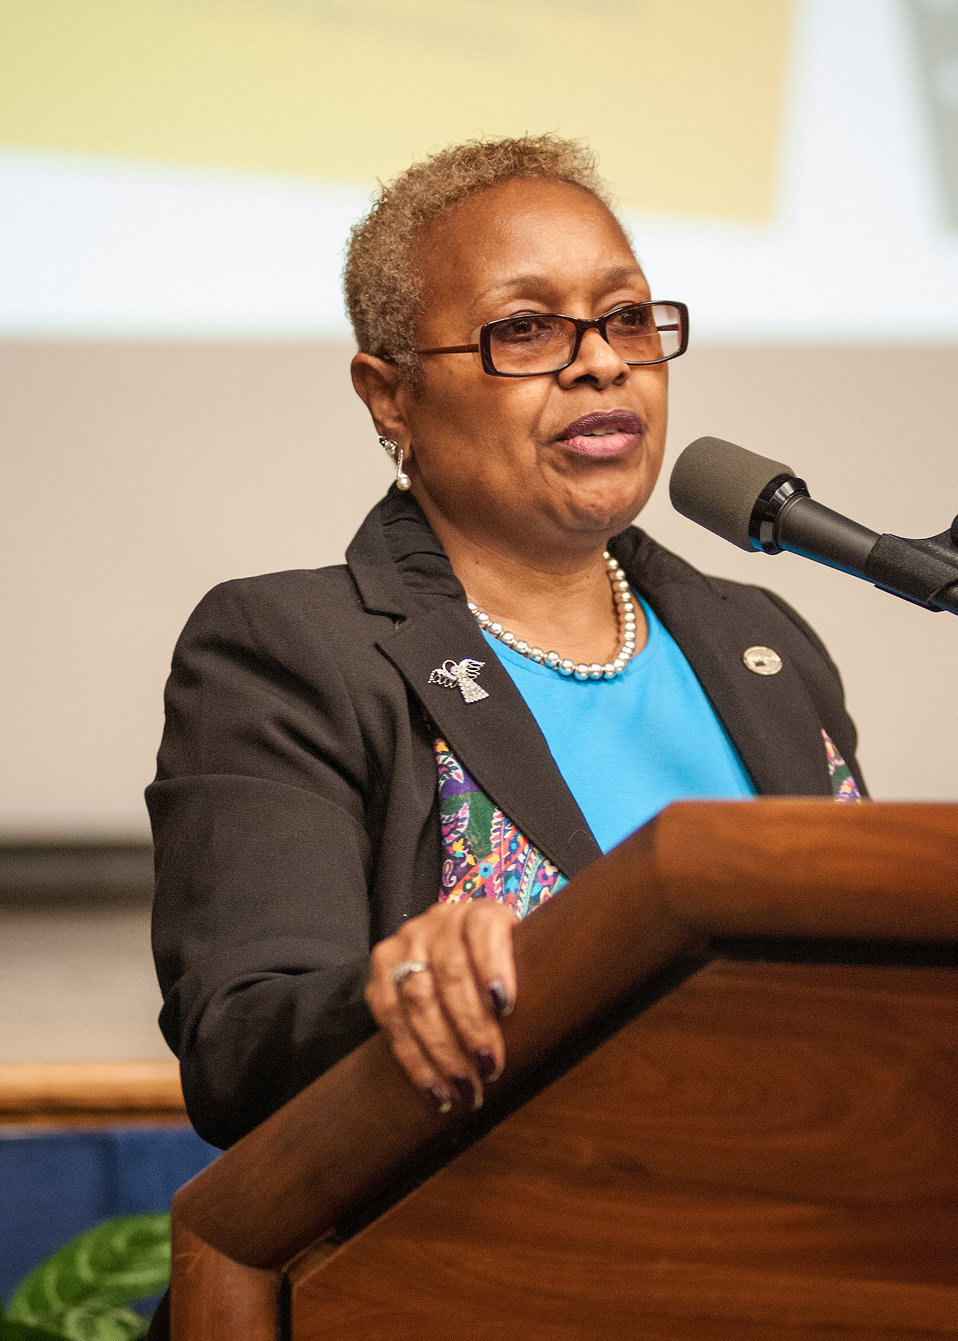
U.S. Department of Agriculture (USDA) Office of the Assistant Secretary for Civil Rights, Compliance Division Chief Geraldine Herring discusses the role of the Office of Civil Rights at the First Annual All Hands Special Emphasis Program Managers (SEPM) Meeting at the U.S. Department of Agriculture Jefferson Auditorium in Washington, D.C. on Wednesday, Mar. 13, 2013.